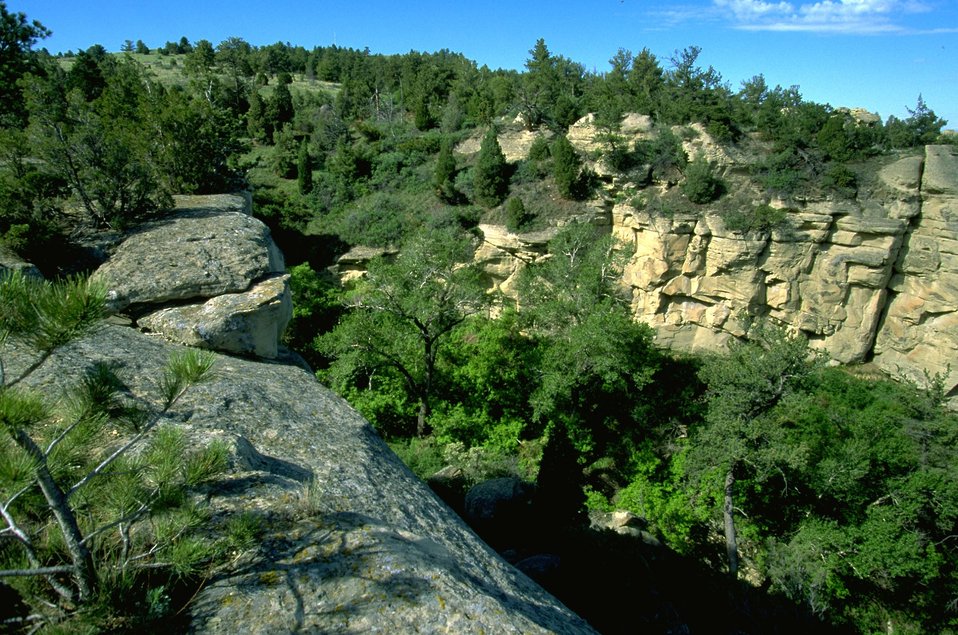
Sandstone bluffs and trees in the Four Dances Natural Area